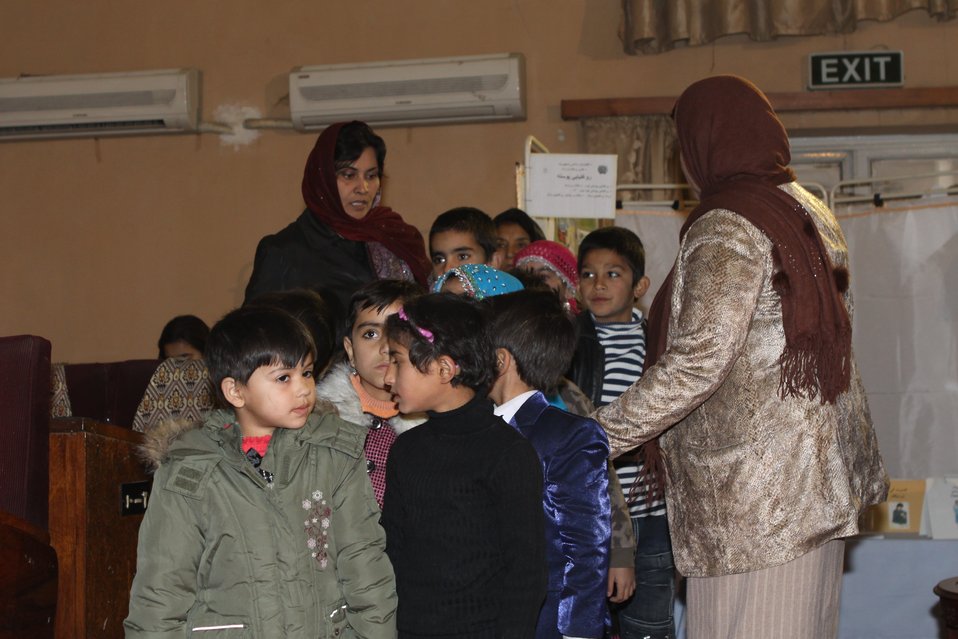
Community Health Workers Celebrated

Kabul, Afghanistan | December 5, 2010 — In support of the United Nations designated International Volunteer Day for Economic and Social Development, Afghanistan’s Ministry of Public Health celebrated its annual Community Health Worker Day today. Acting Minister of Public Health Dr. Suraya Dalil, USAID Senior Deputy Mission Director Robert Hellyer, other government officials, and international donors joined in recognizing the critical contribution of community health workers in Afghanistan and encouraging them to continue their voluntary support to their communities.
The event praised the contributions of the more than 22,000 volunteers throughout the country who deliver community level health-education, counseling, and services out of village health posts located in private homes. The Ministry of Public Health envisioned that community-based healthcare programs will actively encourage communities and families to adopt healthy lifestyles and behaviors, and provide families access to high quality and socially acceptable preventative medicine and life-saving services.
“We have 22,000 community health workers in Afghanistan that are able to implement the basic and standard medicines. They all have been trained through a job description,” said Minister Dalil. Addressing the health workers, she added, “I am proud and feel powerful that I have people like you.”
USAID-funded health projects collaborate closely with the Ministry of Public Health to improve the health and nutritional status of Afghans, provide quality primary healthcare, and promote healthy behaviors at the community and household-levels. USAID supported the training of more than 9,000 of the volunteer community health workers currently working in Afghanistan.
“On behalf of the American people, I congratulate the Community Health Workers for their diligence to gain the skills and knowledge necessary to serve their communities in this important role,” said USAID Senior Deputy Mission Director Hellyer. “USAID strongly supports community based health care and believes that quality community-based health services are essential to reaching Afghanistan’s Millennium Development Goals.”
To support the Basic Package of Health Services, USAID assisted in developing the community health worker training manual, helped train community health worker supervisors and master-trainers, facilitated in-service training, and produced and developed reporting tools, job aids, and education materials.